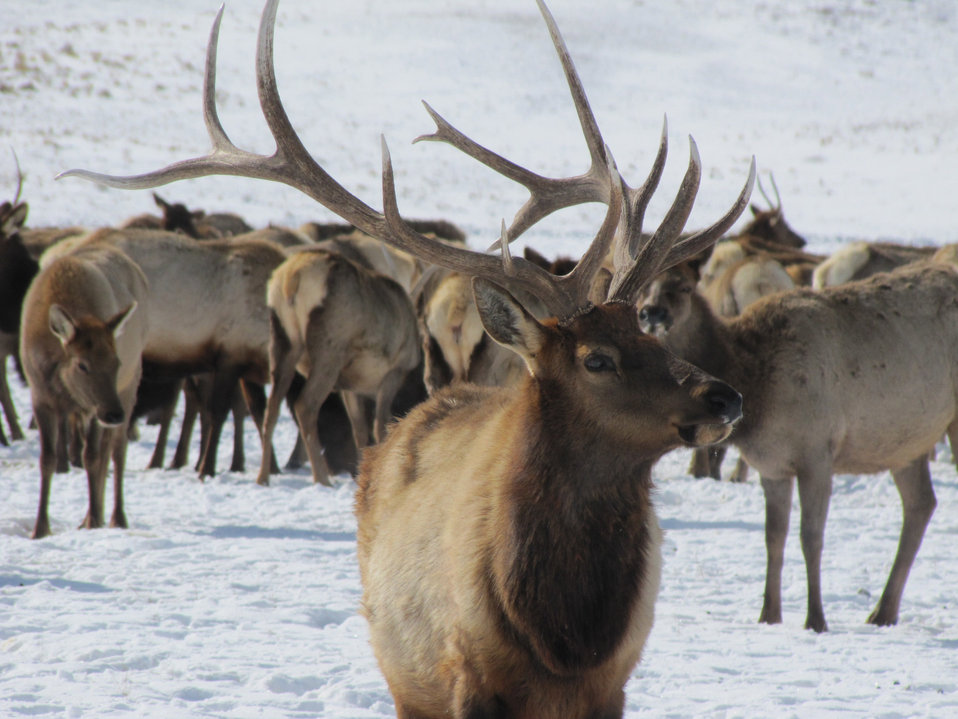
Strutting His Stuff

A bull elk sports a beautiful set of antlers in early March. The elk and the antlers may soon part ways. The largest bulls begin dropping their antlers in early to mid-March.

Two additional sets within the National Elk Refuge photo collection (www.flickr.com/photos/usfwsmtnprairie/collections/7215762...) share pictures and information about elk antlers:

Elk Antlers - www.flickr.com/photos/usfwsmtnprairie/sets/72157627926248...
Antler Auction - www.flickr.com/photos/usfwsmtnprairie/sets/72157627925186...